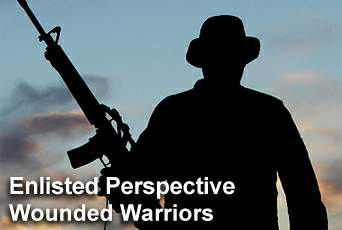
Enlisted Perspective

In the newest